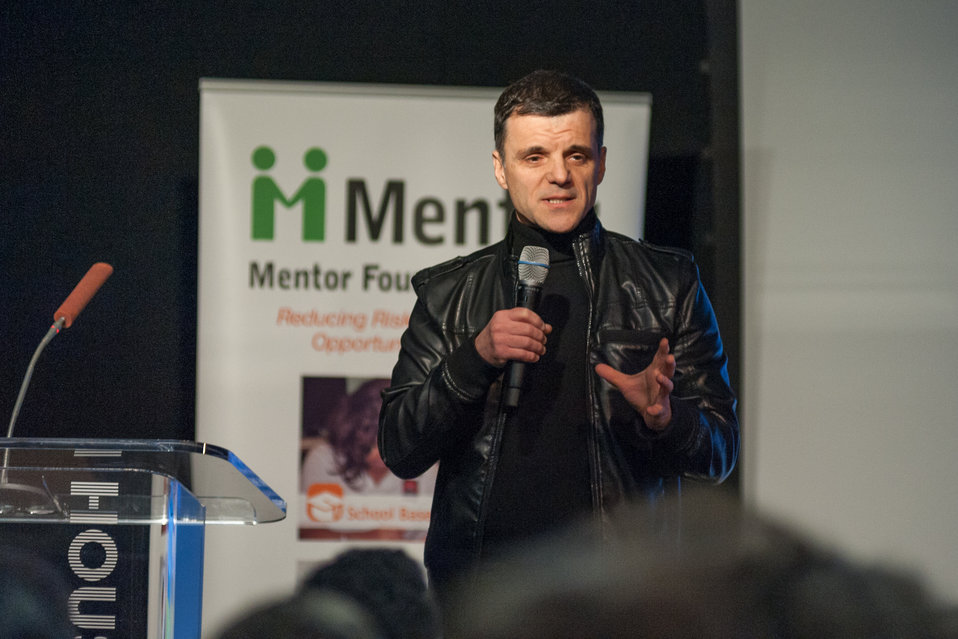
Mentor NDFW Event 2014

Mentor Foundation USA, in partnership with the National Institute on Drug Abuse (NIDA) and other key partners hosted a Youth Drug Facts Rally at the House of Sweden on Thursday, 30th January 2014. Approximately 200 students from five local high schools attended and had the opportunity to interact with top U.S. scientific experts, including Dr. Ruben Baler of NIDA and inspiring guest speakers to “shatter the myths” about drugs and substance abuse, while pledging to stay drug-free.